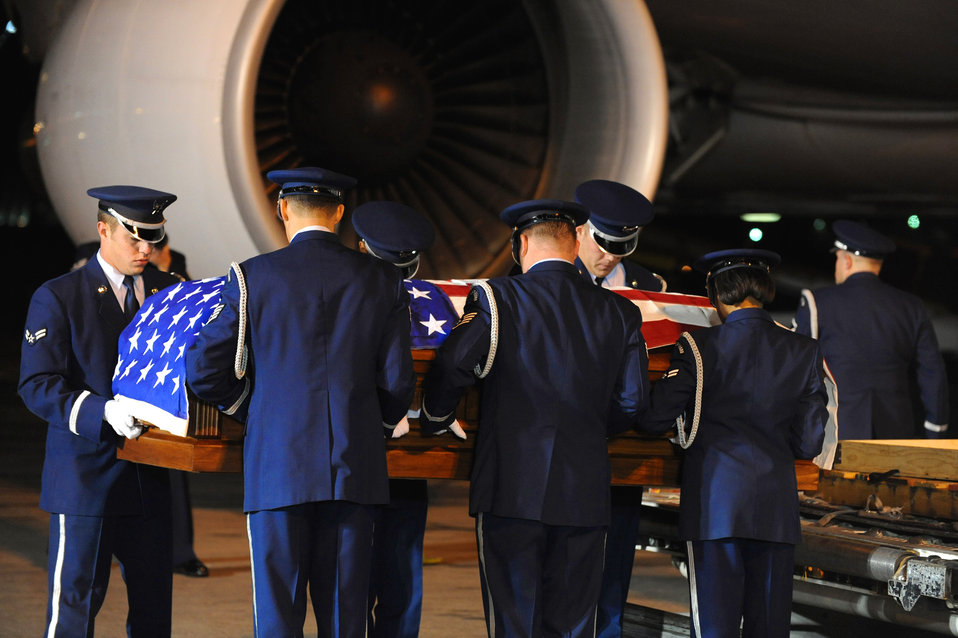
Airmen honor the fallen

Members of the Nellis Air Force Base, Nev., honor guard provide a dignified transfer for the remains of Maj. Russell C. Goodman Jan. 12, 2010 at McCarran International Airport in Las Vegas.